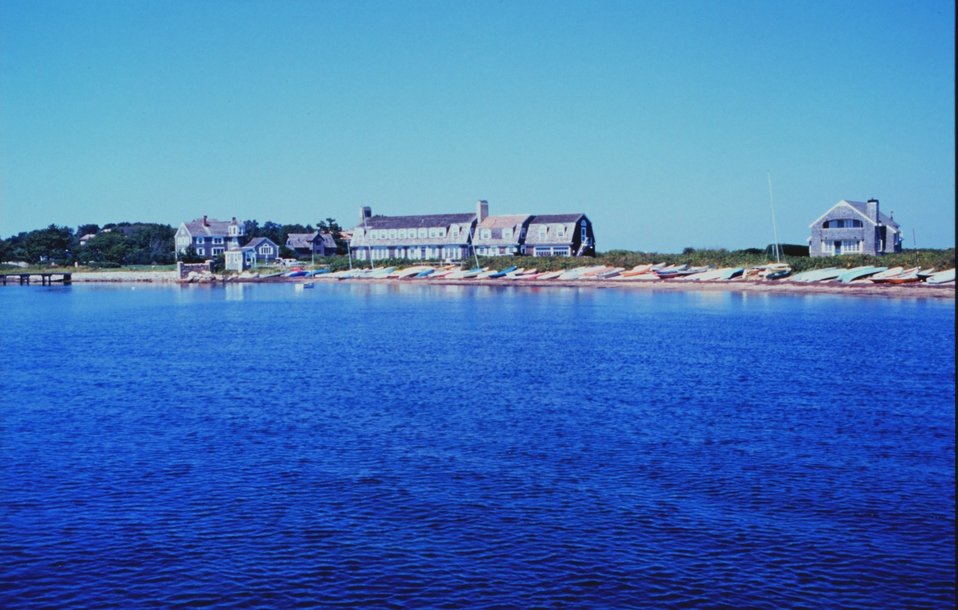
Great Harbor at Woods Hole